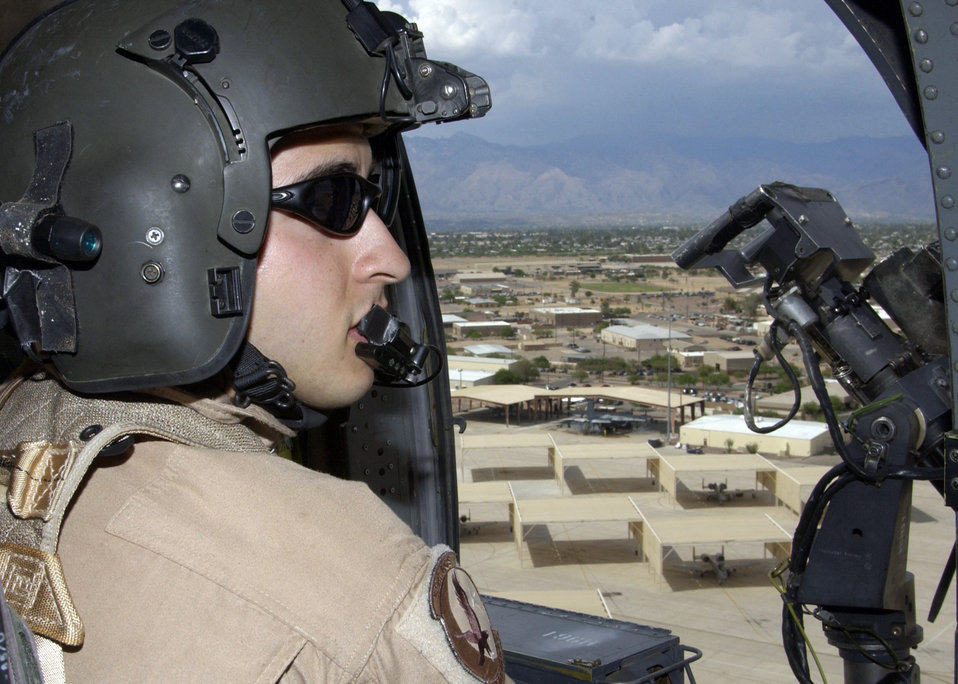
Keen eye

DAVIS-MONTHAN AIR FORCE BASE, Ariz. -- Airman 1st Class Pete Tassani keeps a keen eye on developing thunderstorms and ensures a safe flight path for the HH-60G Pave Hawk helicopter during a routine mission July 25. Airman Tassani is a flight engineer assigned to 55th Rescue Squadron.